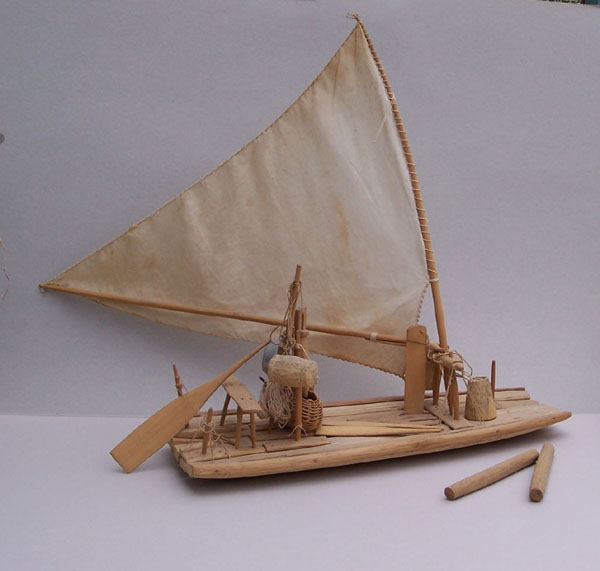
modell of a Jangada, built by Airton Caetano da Silva, Fortaleza CE Jangadas: A Brazilian Fishing Craft